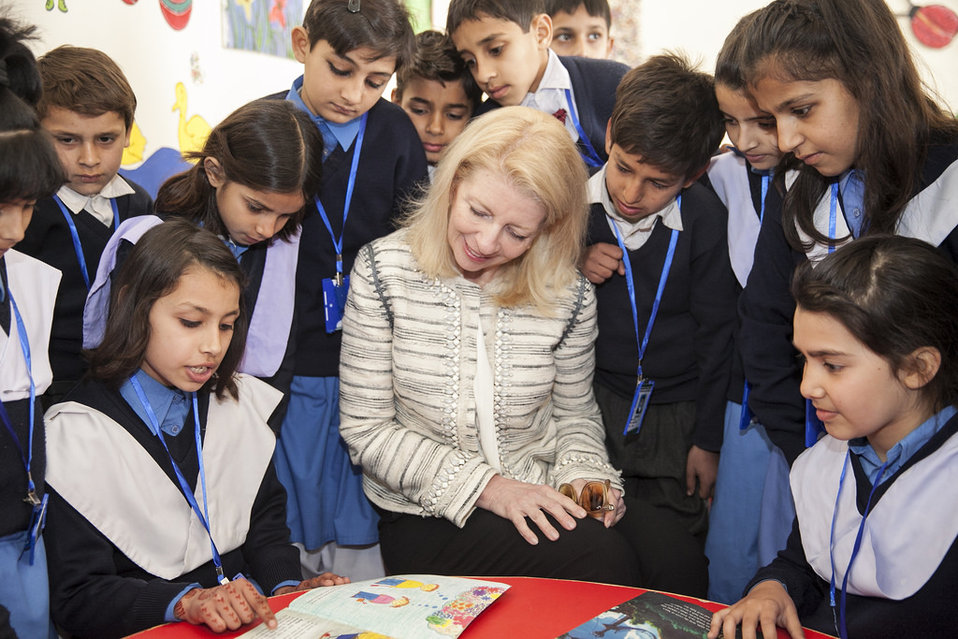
United States and Pakistan Launch the Pakistan Reading Project